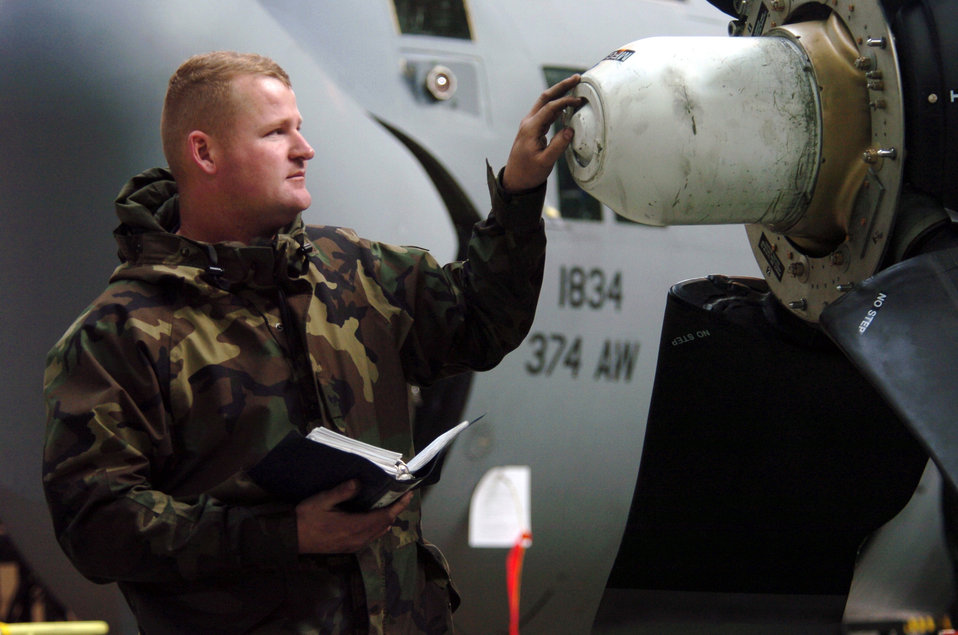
Checking the dome

YOKOTA AIR BASE, Japan -- Airman 1st Class Todd Caddell checks the dome cap on C-130 Hercules engine propeller at their facility here Dec. 8. Airman Caddell is an engine specialist assigned to the 374th Maintenance Squadron.